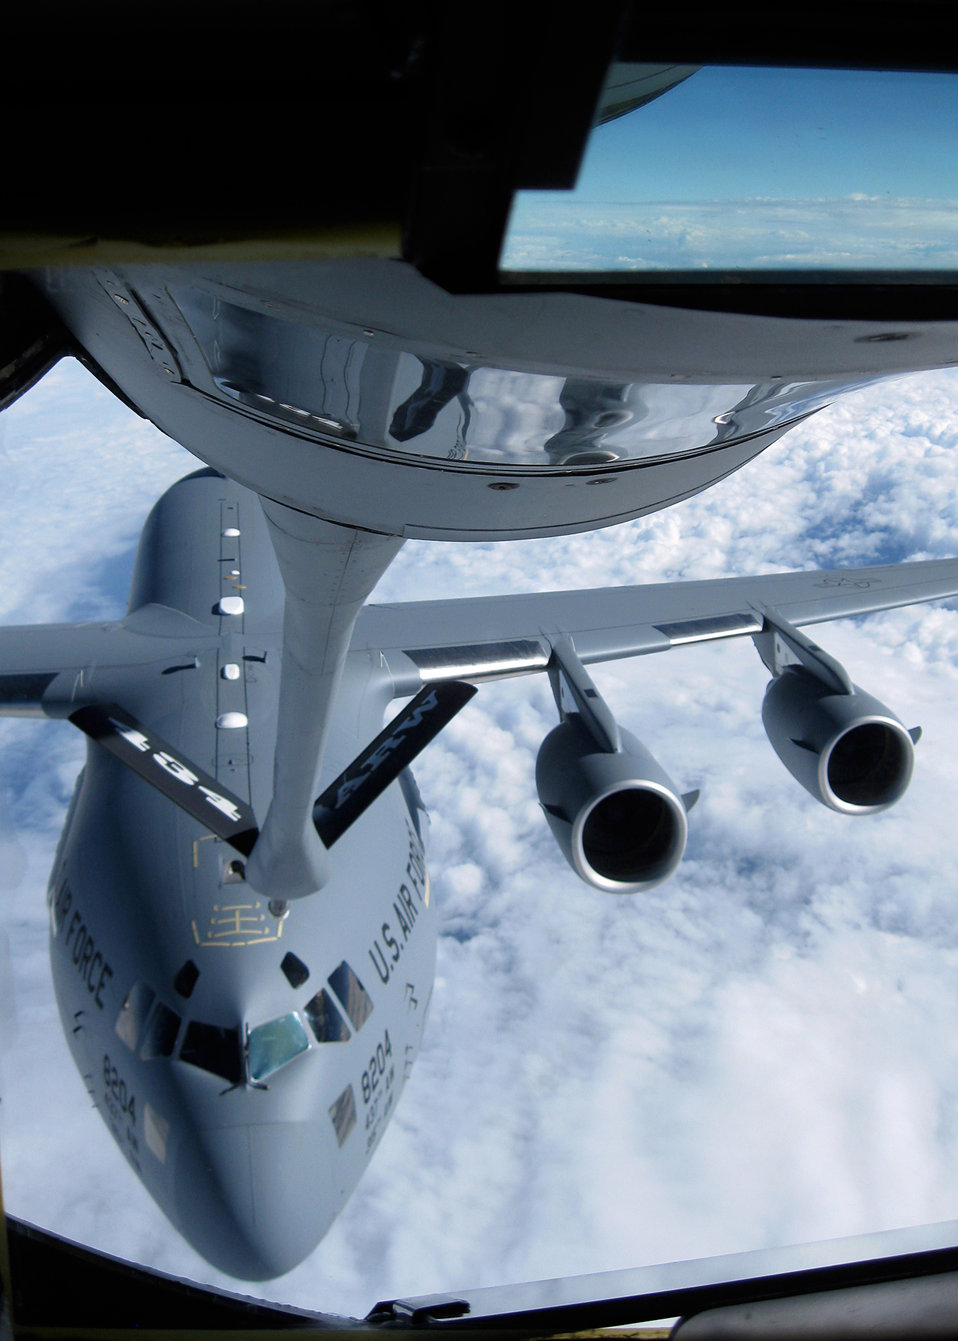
Need fuel now

A C-17 Globemaster III from the 437th Airlift Wing at Joint Base Charleston, S.C., approaches a KC-135R Stratotanker during an in-flight refueling mission Oct. 27, 2010. The Stratotanker is with 434th Air Refueling Wing at Grissom Air Reserve Base, Ind.